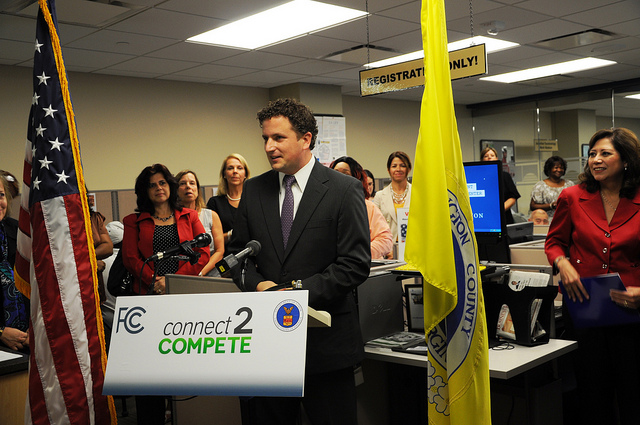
Connect to Compete 7.16.12

Lee Davenport, the Director of Connect2Compete speaking about the New Partnership to Address Digital Literacy and Job Skills Gap.